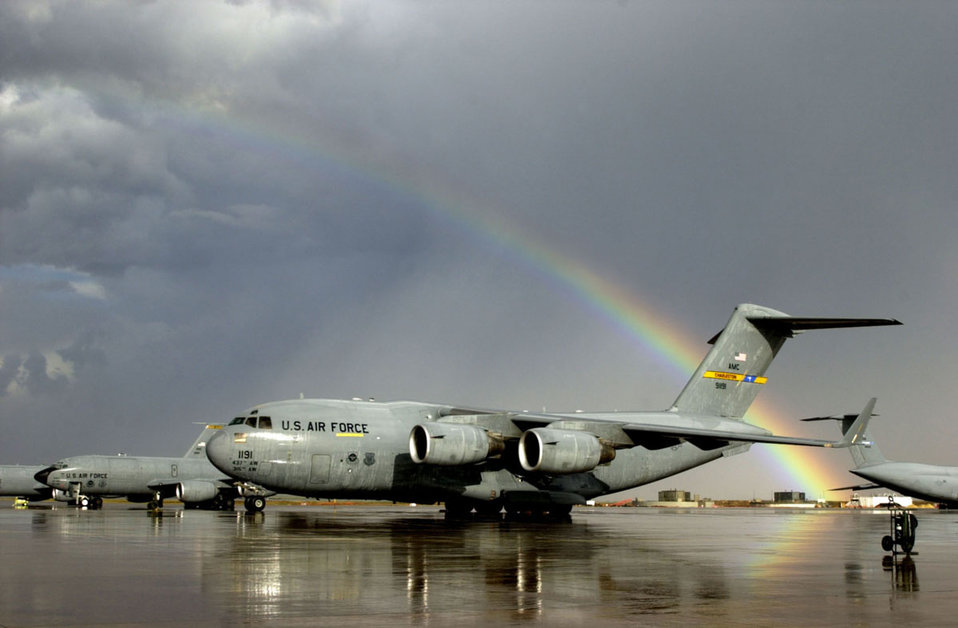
Rainbow After Rain

OPERATION ENDURING FREEDOM -- Following a sudden downpour, a rainbow arcs over a line of U.S. Air Force aircraft at Moron, Air Base, Spain.